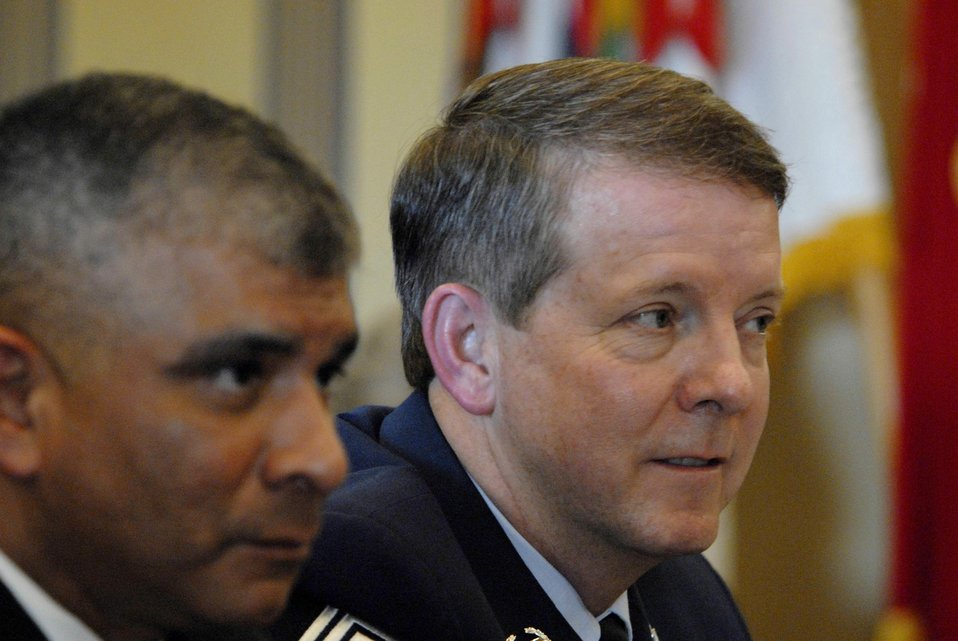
CMSAF testifies on quality of life

Chief Master Sgt. of the Air Force Rodney J. McKinley listens to members of the House Appropriations Subcommittee on Military Construction and Veterans Affairs during a hearing on military quality of life Feb. 7 in Washington, D.C. The House Appropriations Subcommittee on Military Construction and Veterans Affairs held the hearing to discuss military quality of life issues.